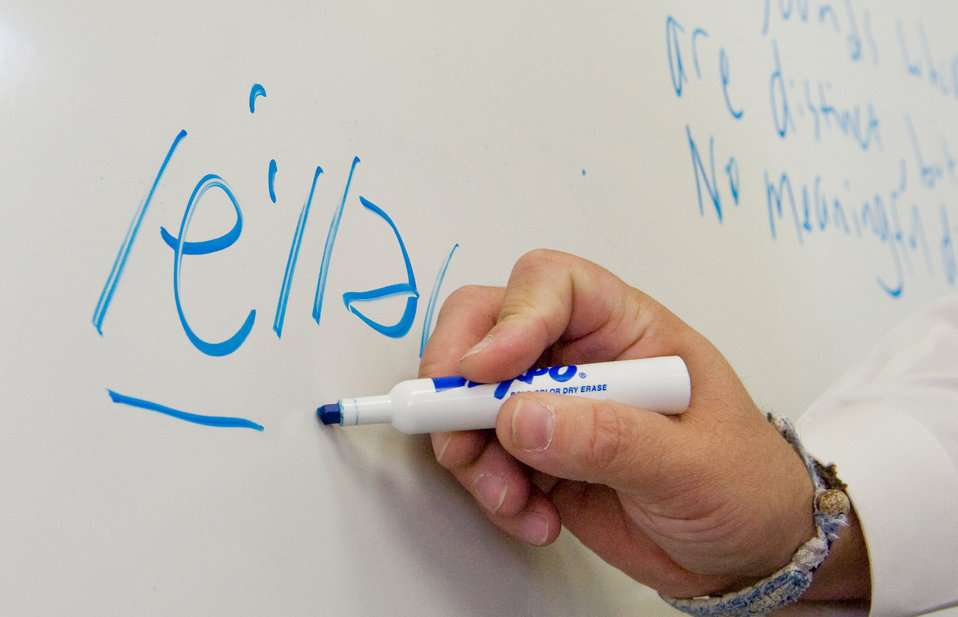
Lackland-based institute teaches English to partner nations

Michael Sheridan discusses pronunciation during the American English Language Instructor Course Oct. 22 at the Defense Language Institute at Lackland Air Force Base, Texas. Mr. Sheridan is an English Instructor in the Instructor Development Branch.